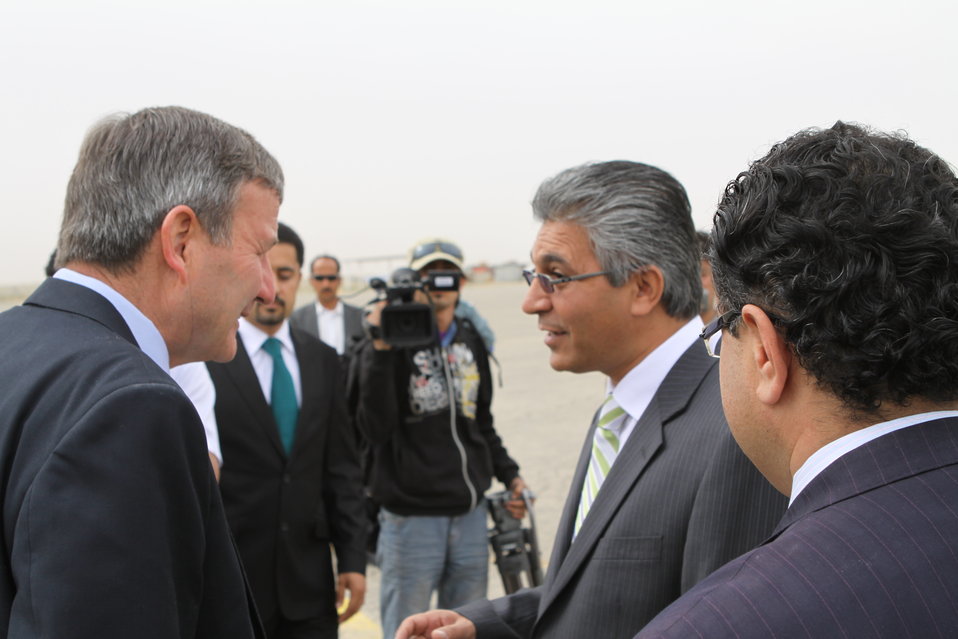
100525 Hirat Marble Conference 028